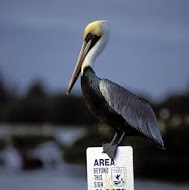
Brown pelican

Scientific name: Pelecanus occidentalis
Status: Recovered